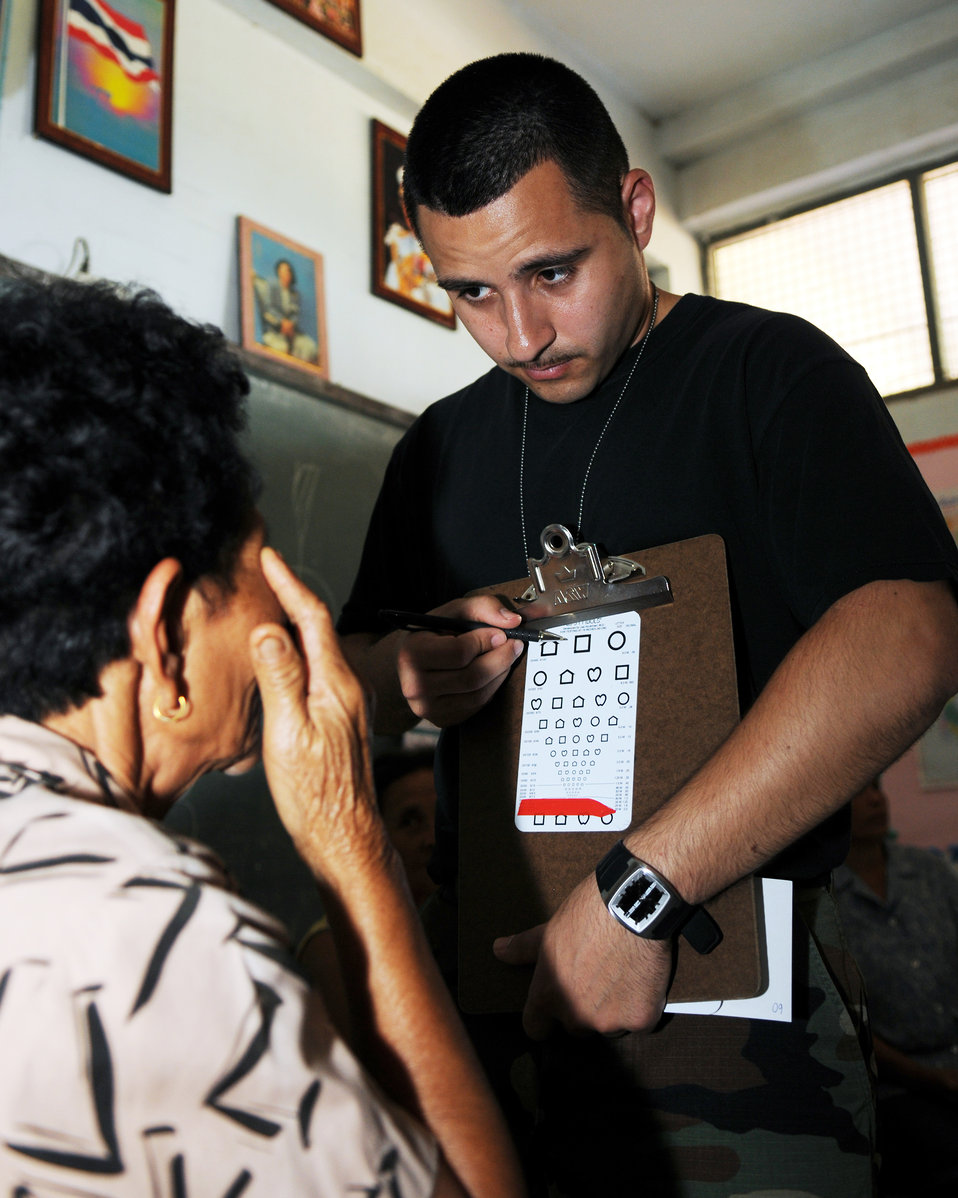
PACAF provides much needed dental and ophthalmologic care to underprivileged in Thailand.

Staff Sgt. David Hernandez checks a patient's eyesight during a joint and multinational humanitarian mission to provide much needed ophthalmologic care to Thailand's underprivileged during Cope Tiger 2009 on March 16. Cope Tiger is an annual exercise held in Thailand to improve combat readiness and combined and joint interoperability of U.S., Thai and Singaporean forces while enhancing regional security and providing humanitarian support. Sergeant Hernandez is an Ophthalmic Technician from the 374th Aerospace Medical Squadron at Yokota Air Base, Japan.